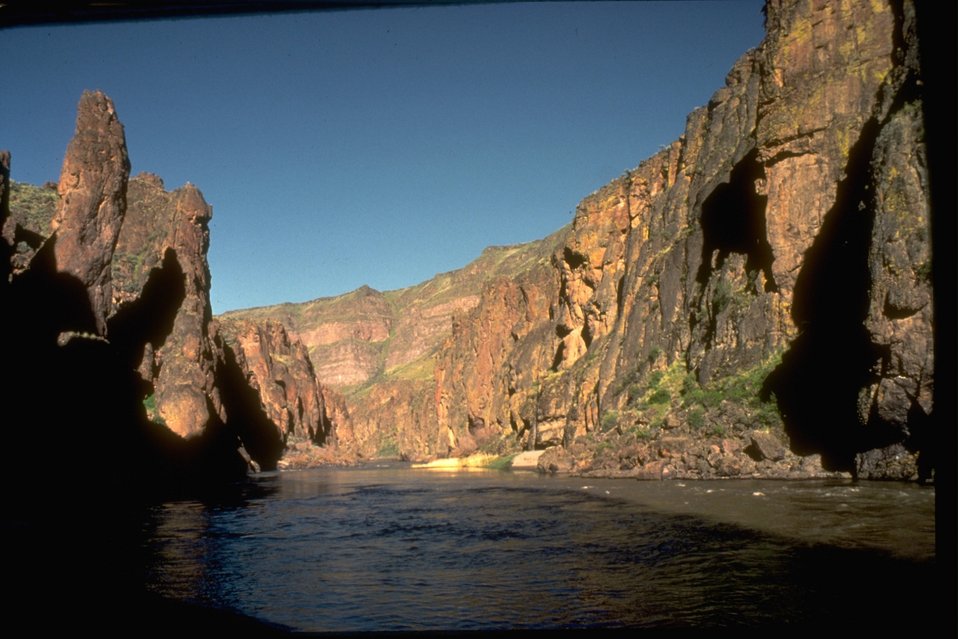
Owyhee Canyon in the Mahogany Ridge Wilderness Study Area. OR 3-195